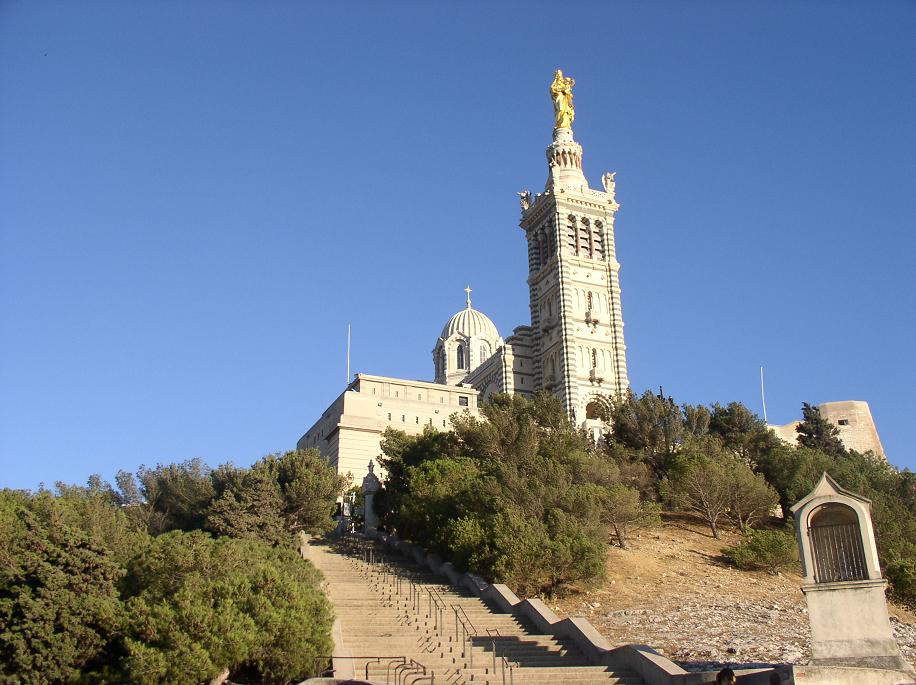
07-Marseille-JA05